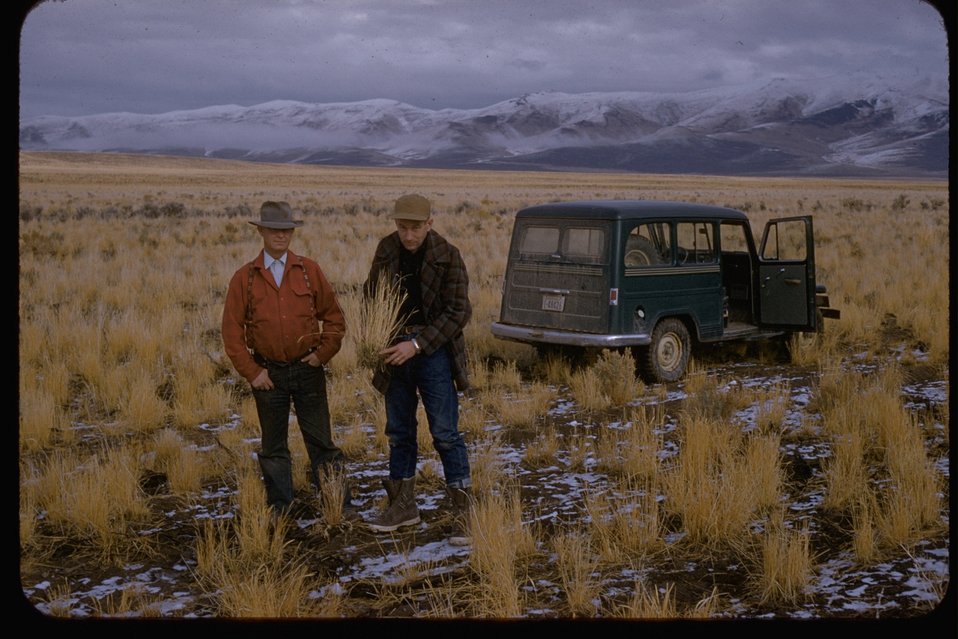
Inspecting crested wheatgrass seeding on the east side of the Steens Mountain. (ca. 1950's)